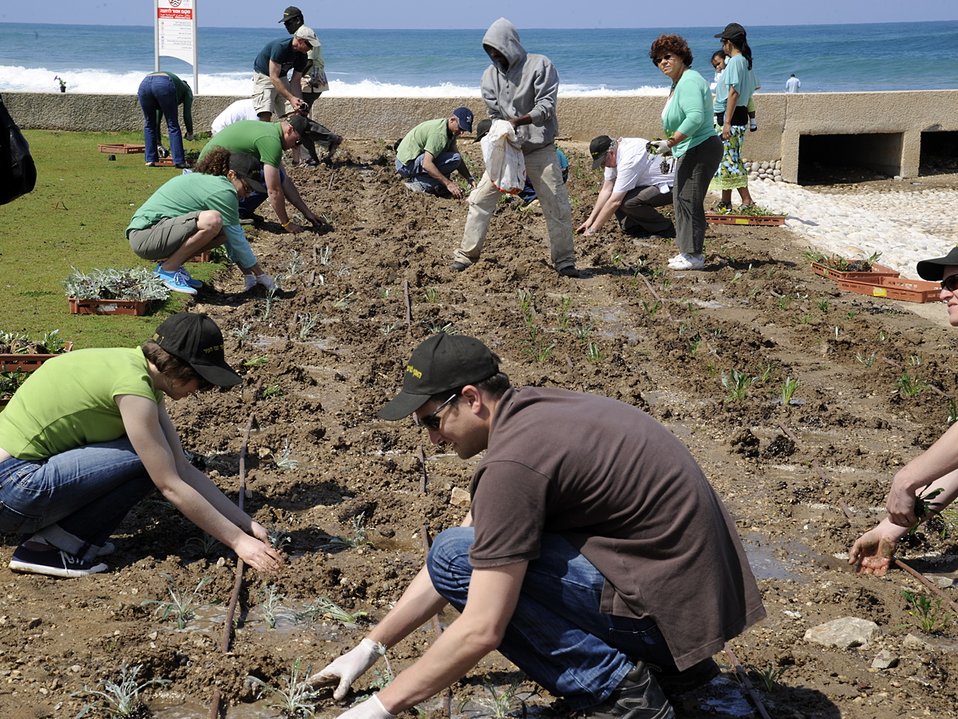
Embassy Tel Aviv Celebrates Earth Day 2012

Staff and friends of the U.S. Embassy, along with representatives from the City of Tel Aviv, celebrate Earth Day 2012 by planting a garden in the vicinity of the beach at Jaffa Slope Park, on April 20, 2012.